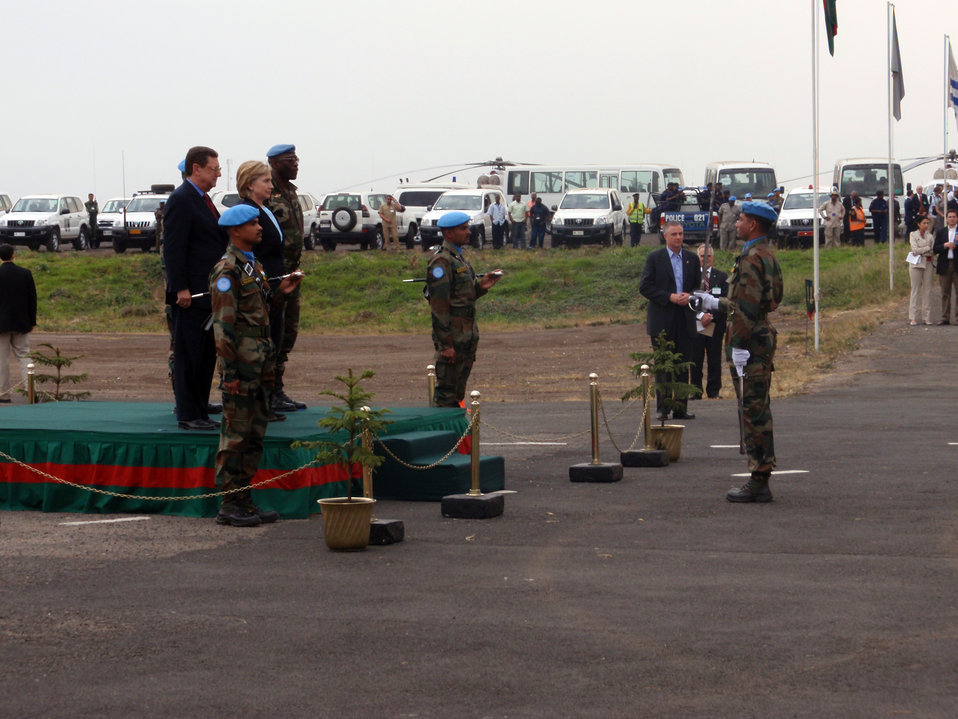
Secretary Clinton Visits MONUC in Goma

U.S. Secretary of State Hillary Rodham Clinton tours the United Nations Mission in the Democratic Republic of Congo (MONUC) air support operations base in Goma, Democratic Republic of Congo August 11, 2009.